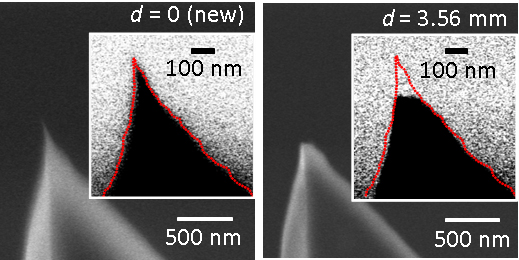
Atomic Force Microscope

As an atomic force microscope's tip degrades, the change in tip size and shape affects its resonant frequency and that can be used to accurately measure, in real time, the change in the tip's shape, thereby resulting in more accurate measurements and images at nanometer size scales.